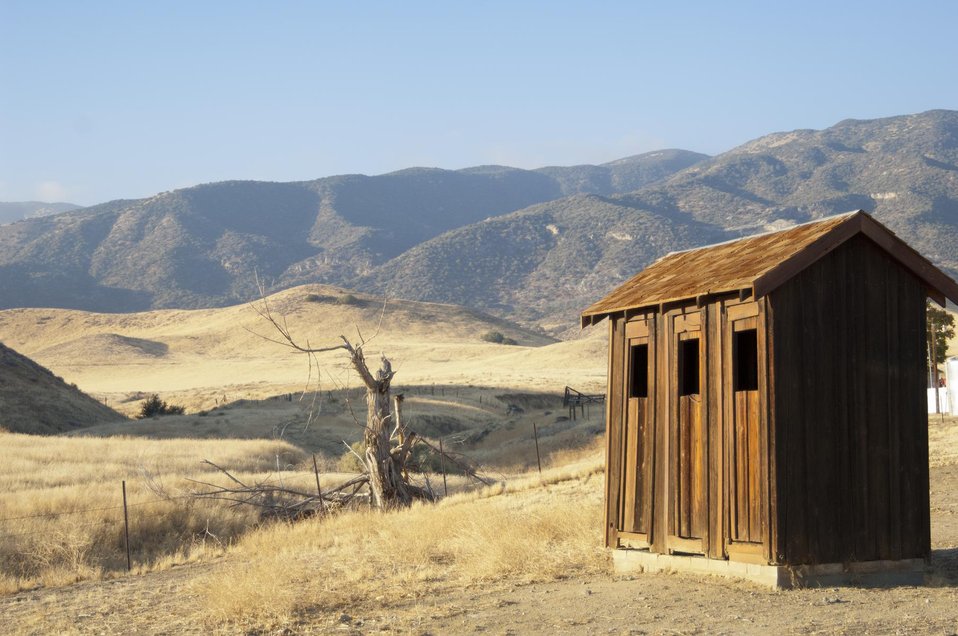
BLM Ranch on the Carrizo Plain 2